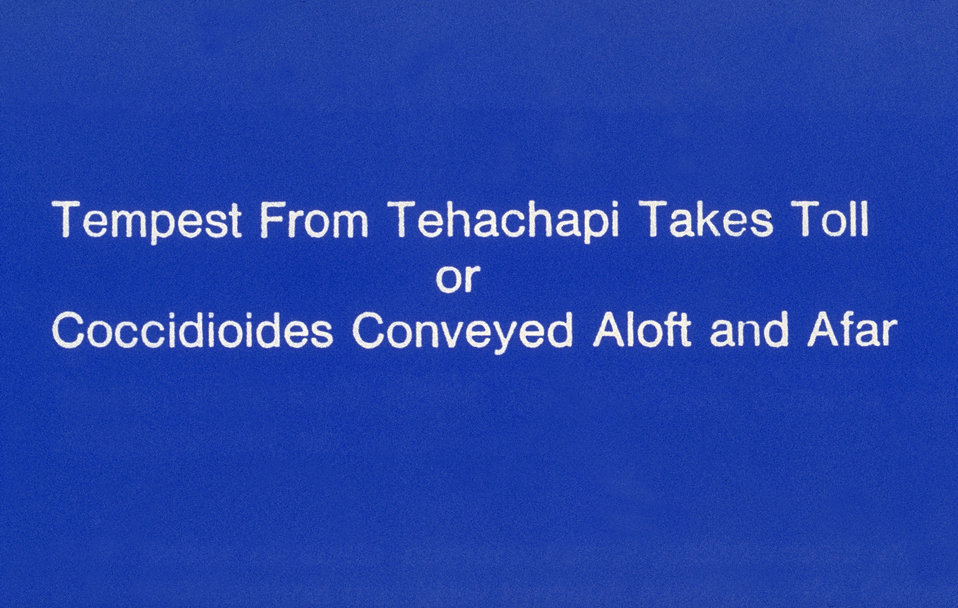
Airborne dissemination of Coccidioides immitis: title slide